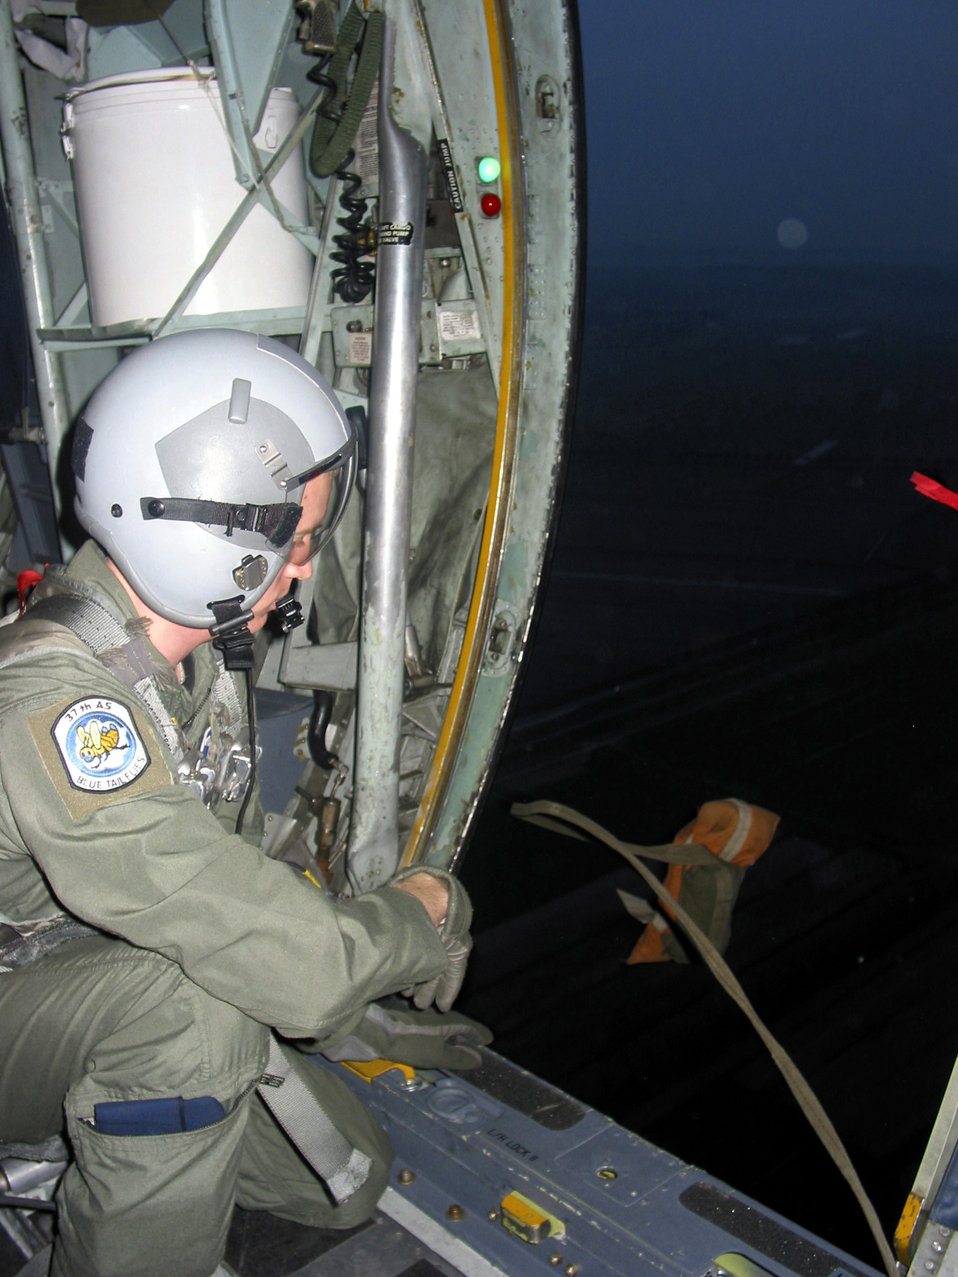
Airmen train in Italy

PISA, Italy -- Airman 1st Class John Columbia throws a 15-pound sandbag out the rear side door of a C-130 Hercules to test drop-zone accuracy during Exercise Leaning Tower here April 2. The weeklong training mission also included low-level flights and night-vision goggle training. Airman Columbia is a loadmaster with the 37th Airlift Squadron at Ramstein Air Base, Germany.